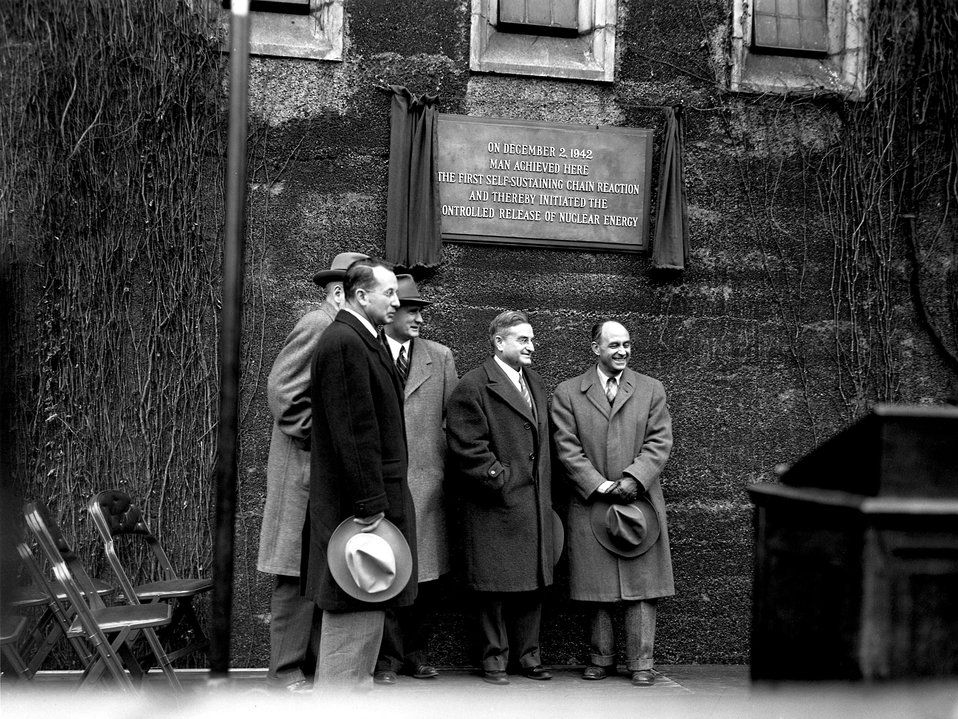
Unveiling the plaque on the West Stands of Stagg Field on the fifth anniversary, December 2, 1947